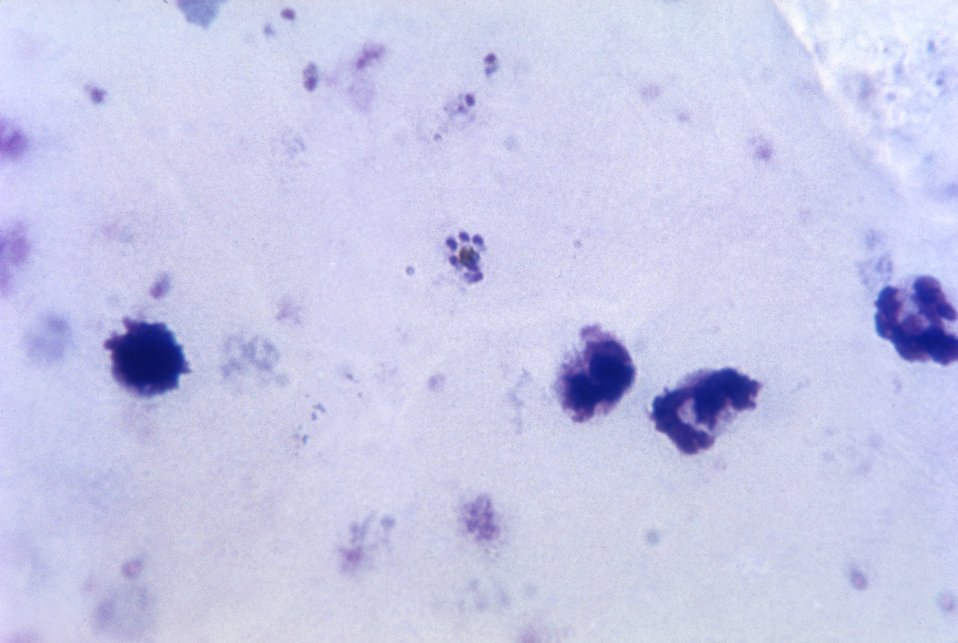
Human malaria parasite in blood smear.